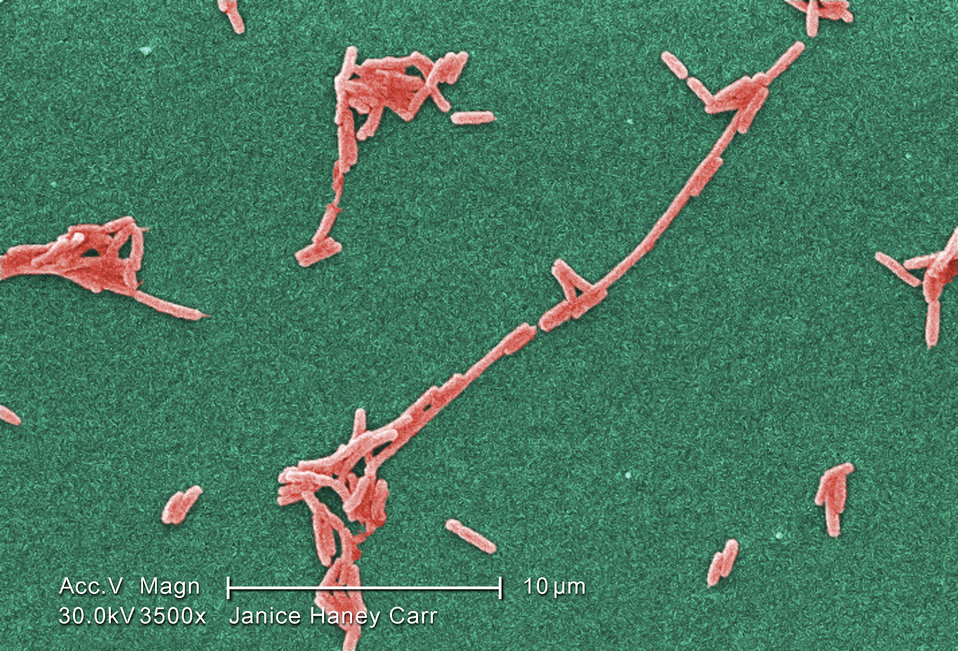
Under a moderately-high magnification of 3500X, this colorized scanning electron micrograph (SEM) depicted a scattered group of Gram-negative Legionella pneumophila bacteria. Please see PHIL 11092 through 11152 for additional SEMs of these organisms, specifically PHIL 11099 for a black and white version of this image.